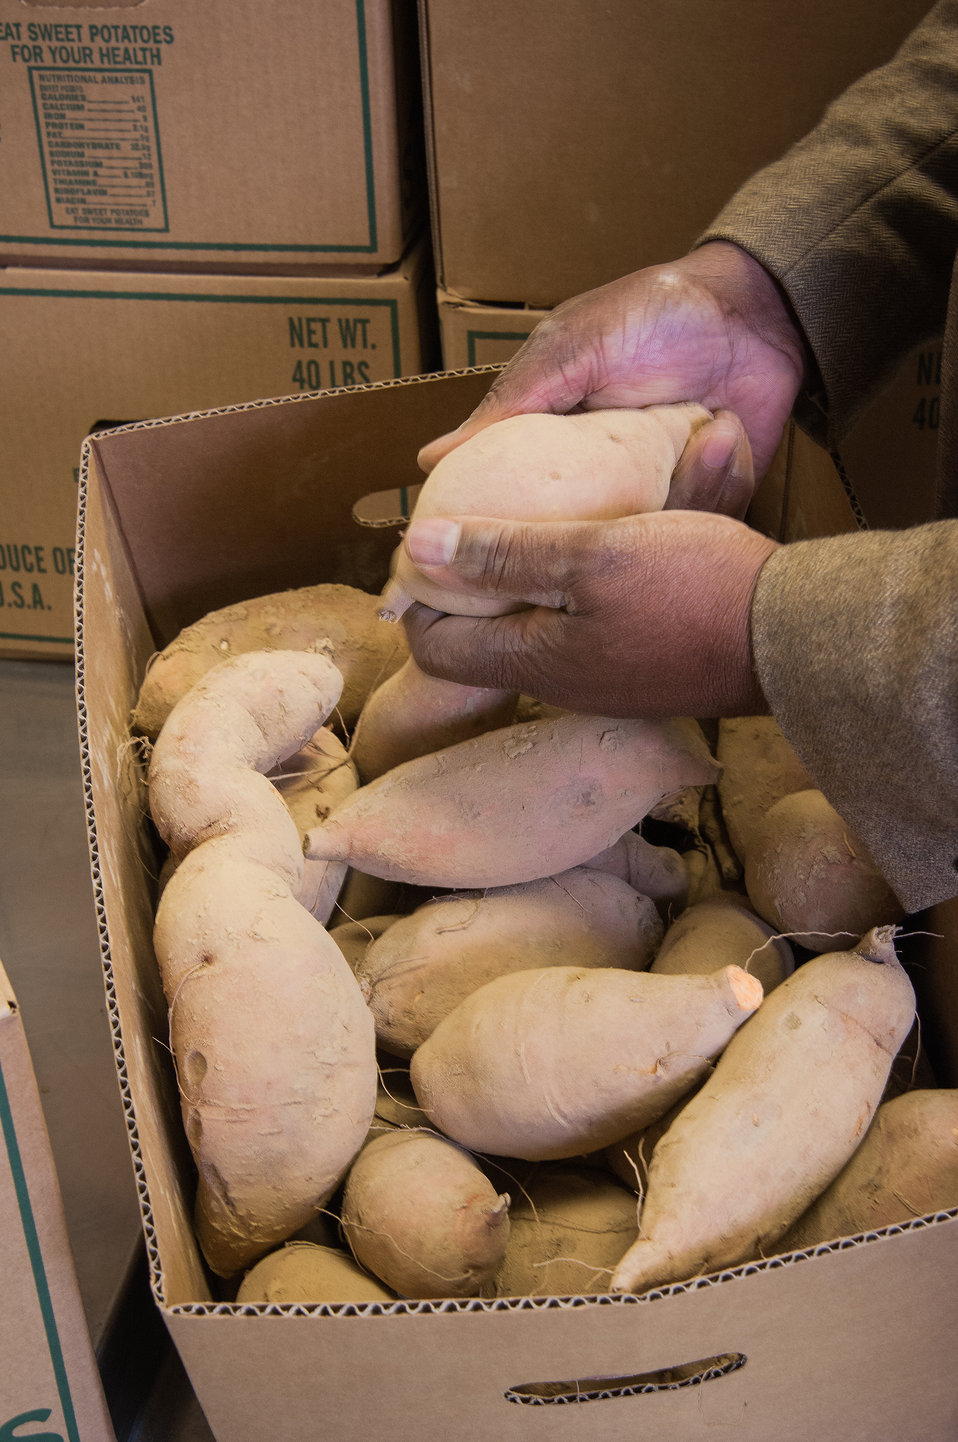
Beauregard sweet potatoes packaged at the University of Arkansas at Pine Bluff, Agriculture Demonstration Outreach Center in Marianna, AR on Mar. 5, 2013. The Arkansas Delta Seeds of Change (ADSOC) was able to purchase production equipment with a U.S. Department of Agriculture (USDA) Rural Development (RD) Rural Business Enterprise Grant (RBEG). USDA in partnership Heifer International (an International organization whose mission is to work with communities to end hunger and poverty and care for the Earth) and various for-profit and non-profit organizations have put in motion the “Seeds of Change Implementation Plan” to use sustainable agriculture to build food systems in the Arkansas Delta. The program has evolved into the ADSOC Initiative. The ADSOC Initiative assists producers with technical assistance for crop production, management, harvesting, food security, value added products and marketing options and provides access to specialized production and marketing equipment.